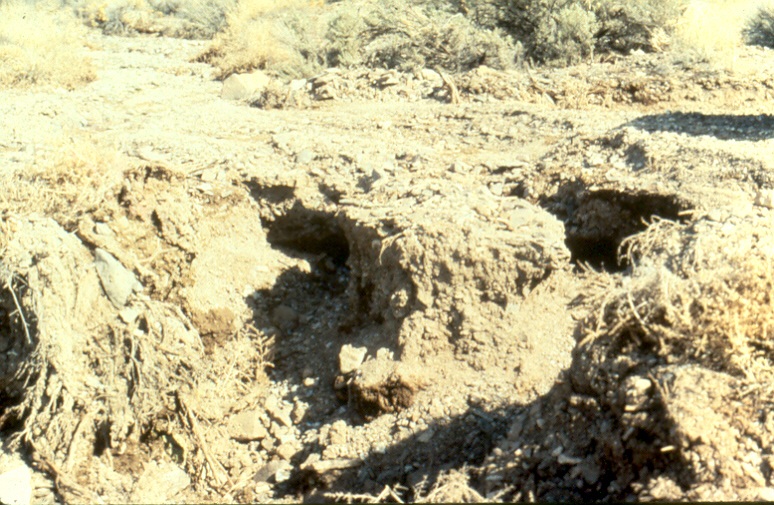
Roads Recreation Erosion Salmon Field Office UCSC Upper Columbia Salmon Clearwater District